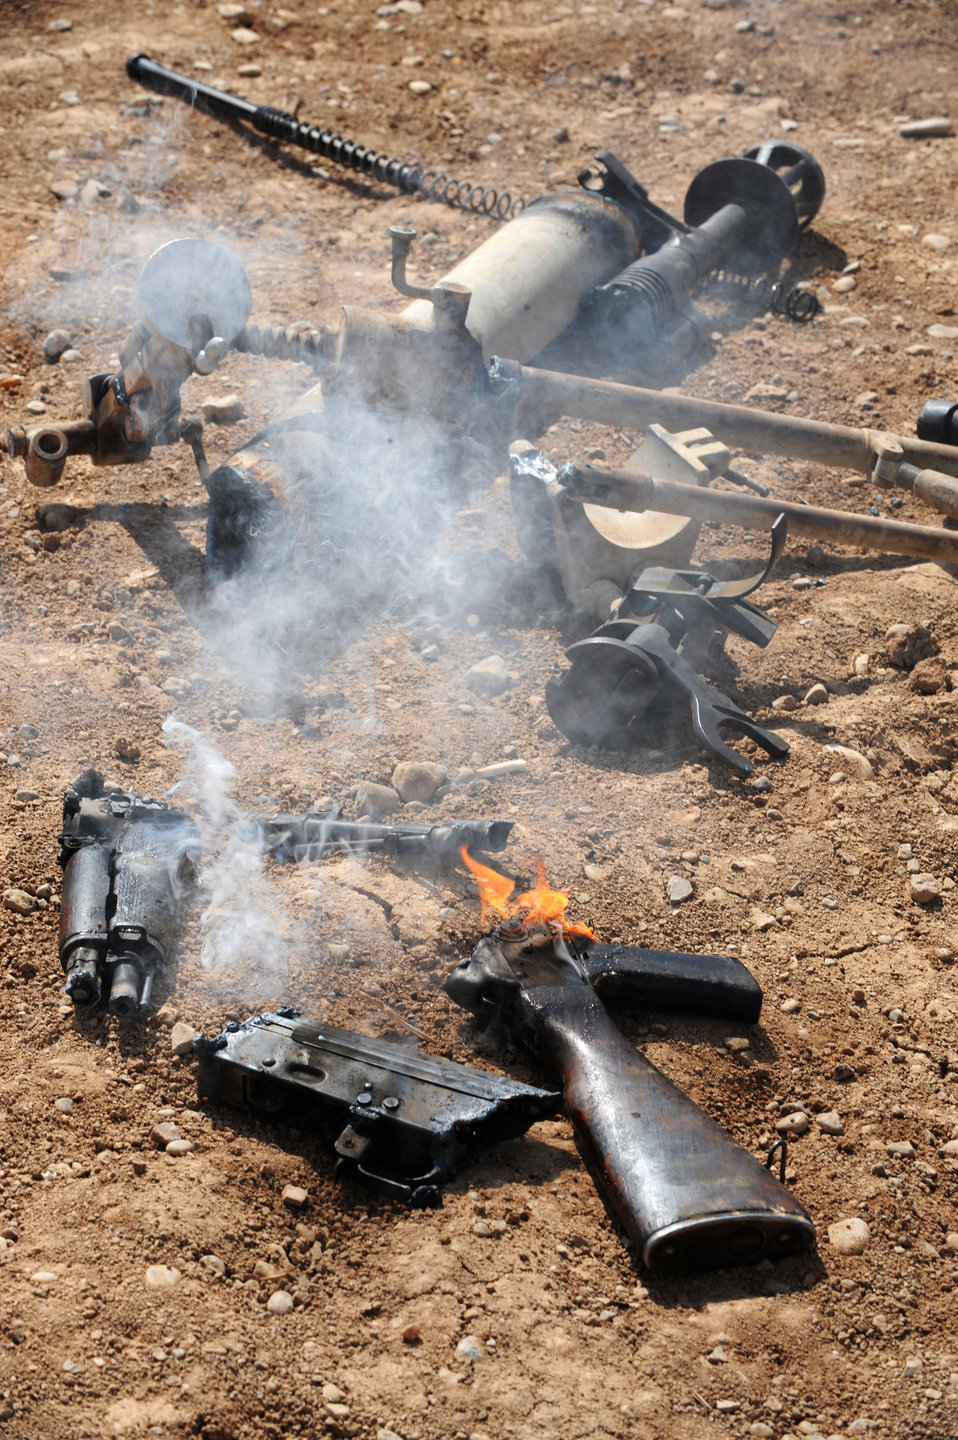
Weapons fire

Pieces of enemy weapons smolder after being destroyed by Airmen from the 332nd Expeditionary Civil Engineer Squadron and 332nd Expeditionary Security Forces Squadron March 18 at Joint Base Balad, Iraq. The weapons were destroyed so they could not be used against coalition forces or Iraqis.